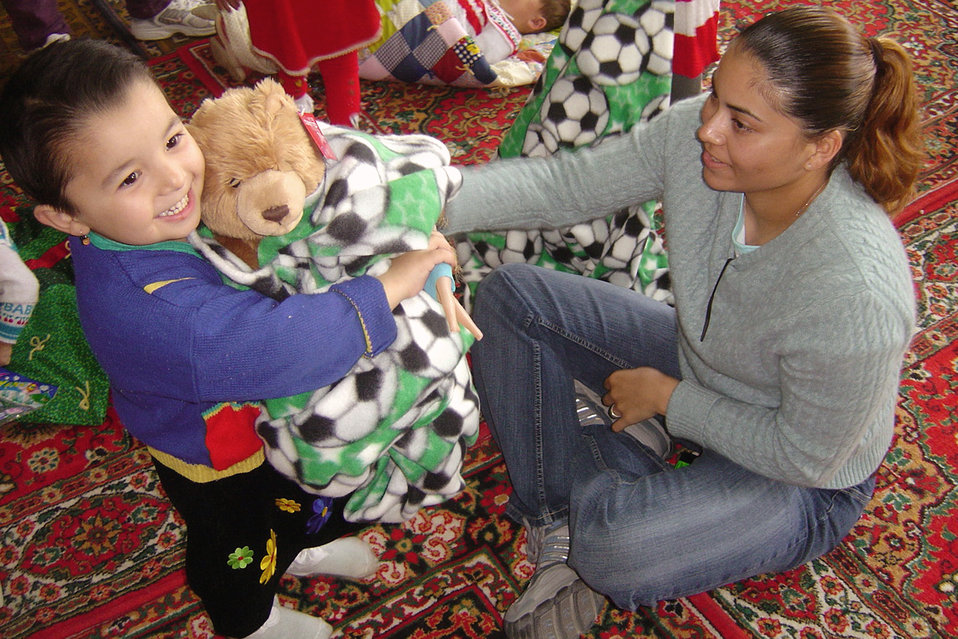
Airmen, Soldiers donate goods to Uzbek baby orphanage

QITAB, Uzbekistan -- Staff Sgt. Patricia Garcia gives a child a teddy bear wrapped in a blanket during a humanitarian aid visit to a baby orphanage here. Airmen, Soldiers and civilians from nearby Karshi-Khanabad Air Base visited the orphanage and handed out handmade baby quilts, baby formula, diapers, clothes and toys. Sergeant Garcia is a contractor escort with the 416th Expeditionary Mission Support Squadron's civil engineer flight and is deployed from Randolph Air Force Base, Texas.